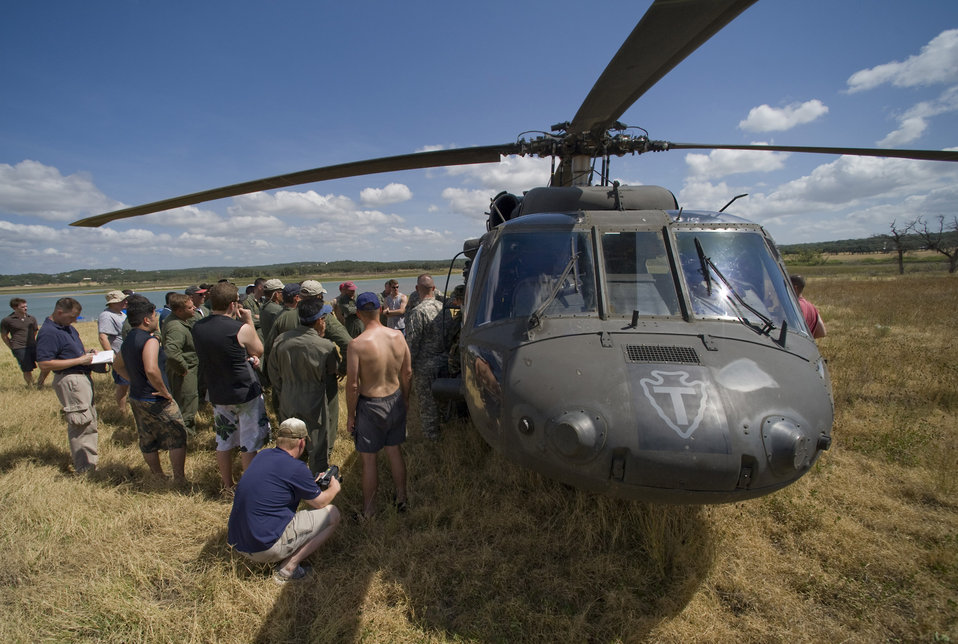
Air Guard flight crews undergo water survival training

Members of the Texas Air National Guard's 149th Fighter Wing gather around a UH-60 Black Hawk for a safety briefing before the water rescue portion of their refresher aircrew water survival training at Canyon Lake near San Antonio. The Black Hawk is assigned to the 149th Aviation Regiment in San Antonio.